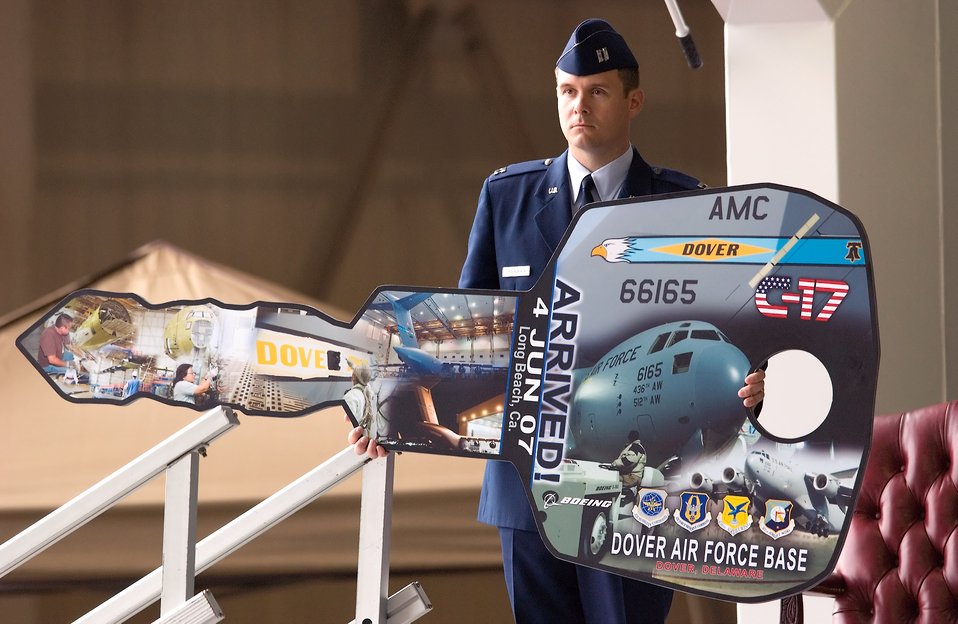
Spirit of the Constitution

Capt. Jason Pennypacker holds the